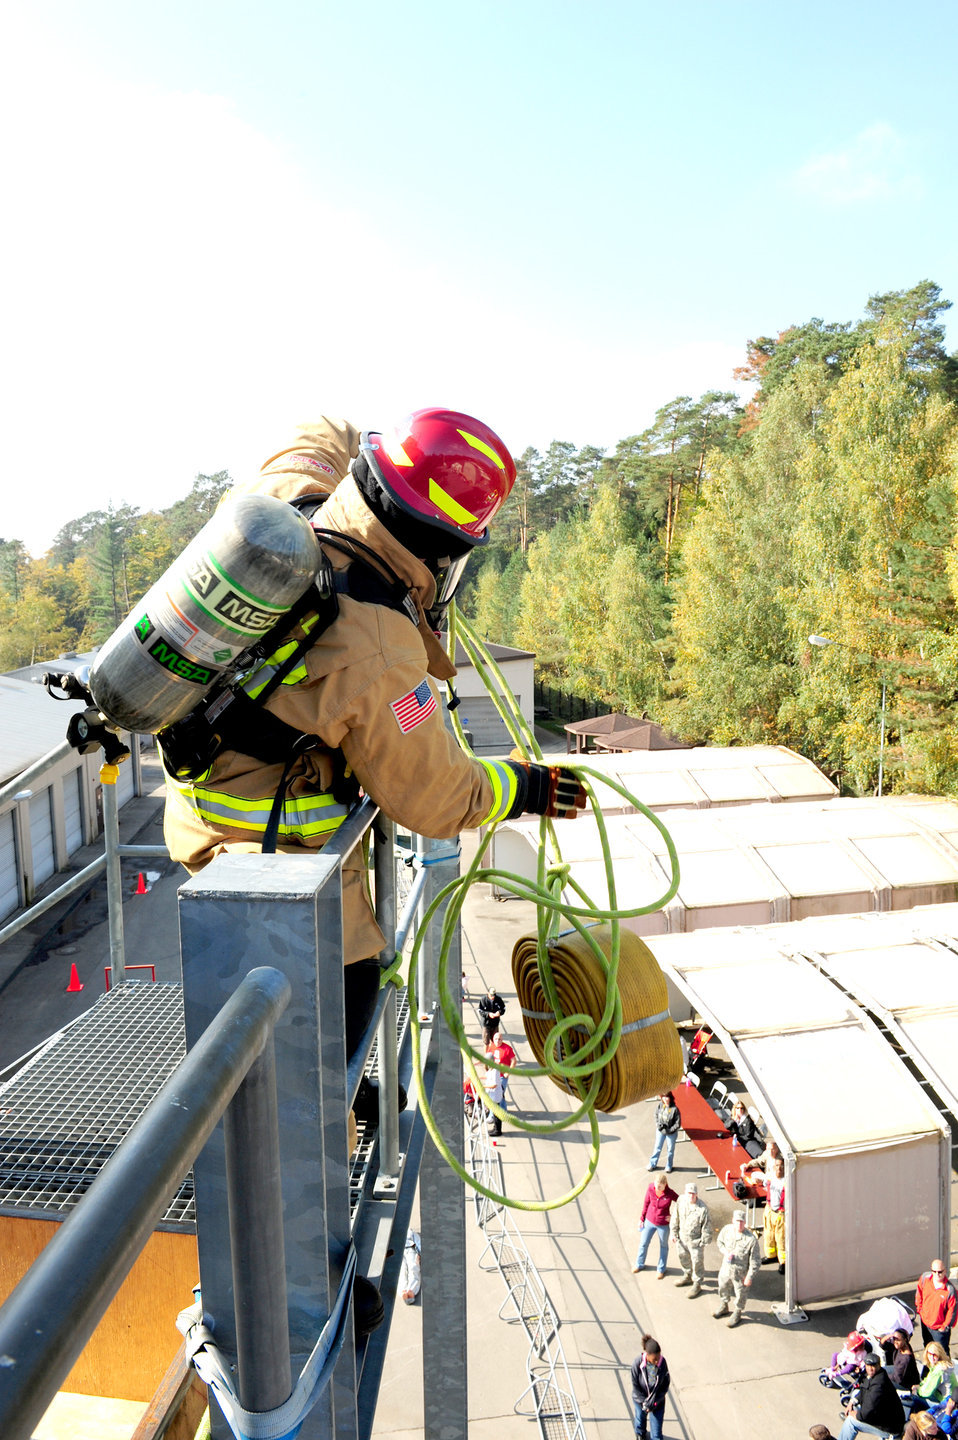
2010 USAFE Combat Firefighter Challenge1

A U.S. Air Forces in Europe firefighter participates in a Firefighter Combat Challenge Oct. 9, 2010 at the 435th Construction and Training Squadron contingency training site at Ramstein Air Base, Germany. The competition consisted of a timed, five-part obstacle course.